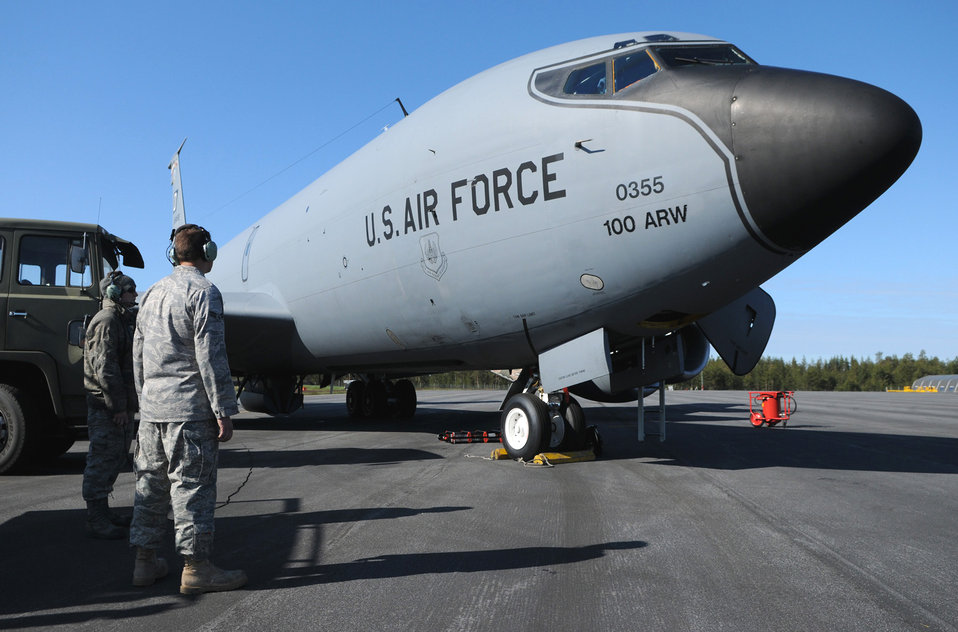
Mildenhall tanker crew deploys to Sweden for exercise support

Maintainers from the 100th Aircraft Maintenance Squadron monitor the premission fueling of a 100th Air Refueling Wing KC-135 before the first mission of Exercise Loyal Arrow 2009 June 8 in Lulea, Sweden. The 10-day exercise included Airmen from Royal Air Force Mildenhall, England, and RAF Lakenheath, England, and Ramstein Air Base, Germany.